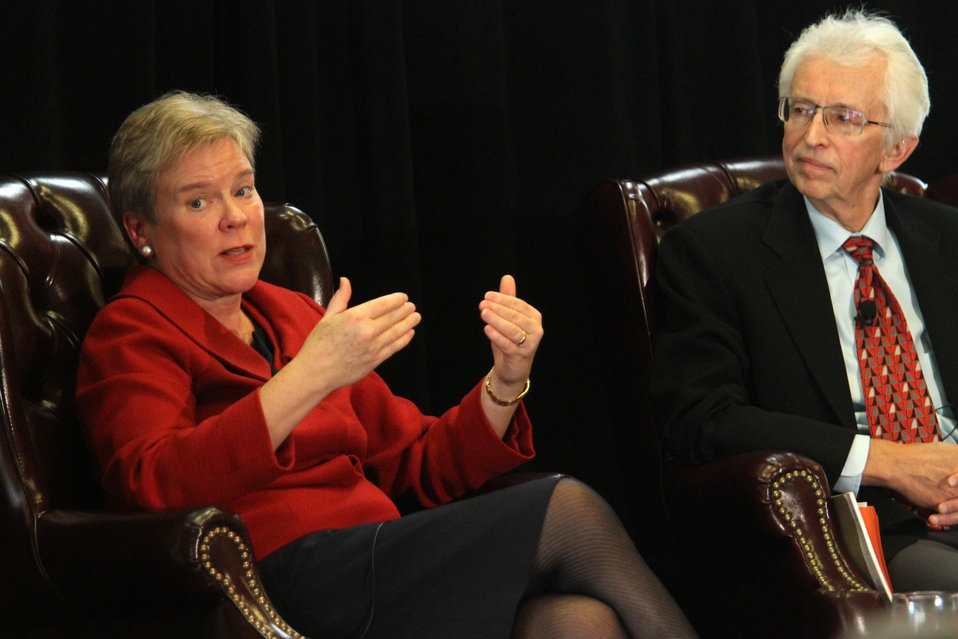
Assistant Secretary Gottemoeller and Dr. Hecker Discuss Arms Control

Assistant Secretary of State for Arms Control, Verification and Compliance Rose Gottemoeller speaks with Dr. Siegfried S. Hecker about 'Arms Control in the Information Age' at the Center for International Security and Cooperation (CISAC) in Stanford, California, on October 27, 2011.